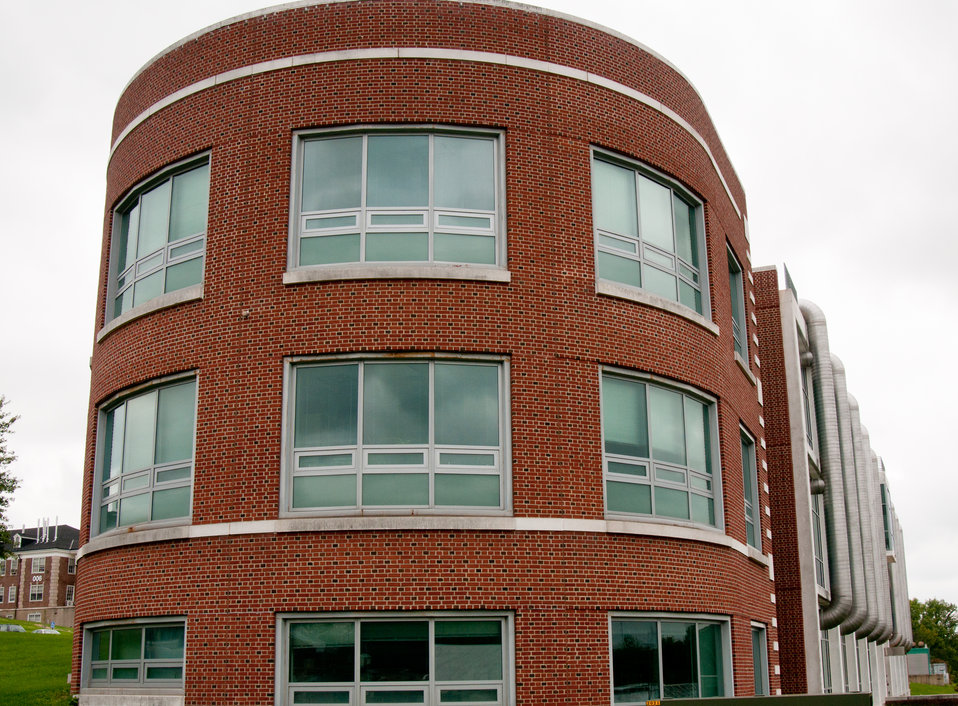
United States Department of Agriculture, Henry A. Wallace Beltsville Agricultural Research Center, Horticultural Sciences Research facility (building 010-A), in Beltsville, MD, on Wednesday, September 21, 2011.